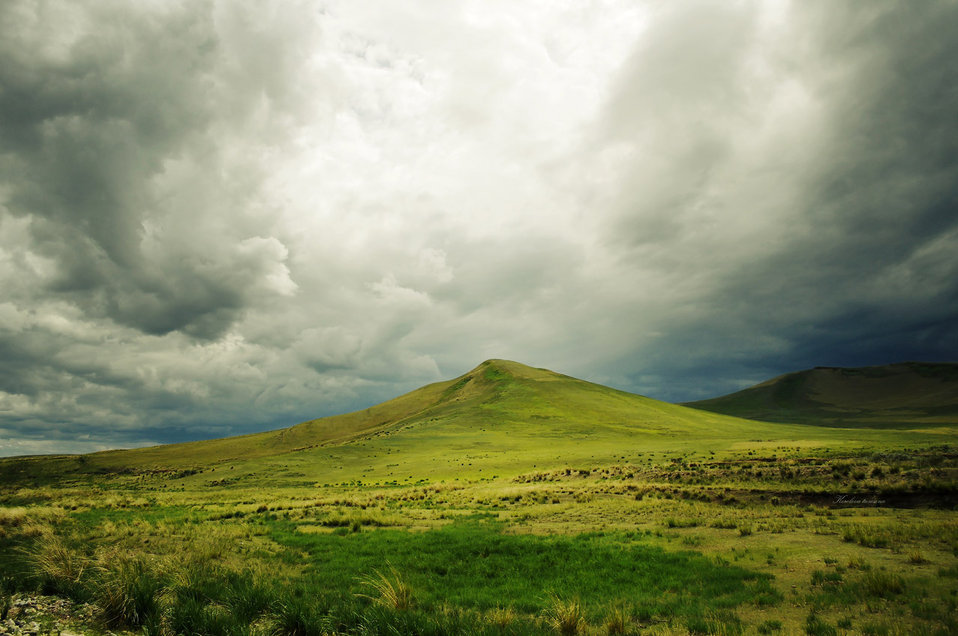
Before the storm

The storm clouds are hovering over the mountain.